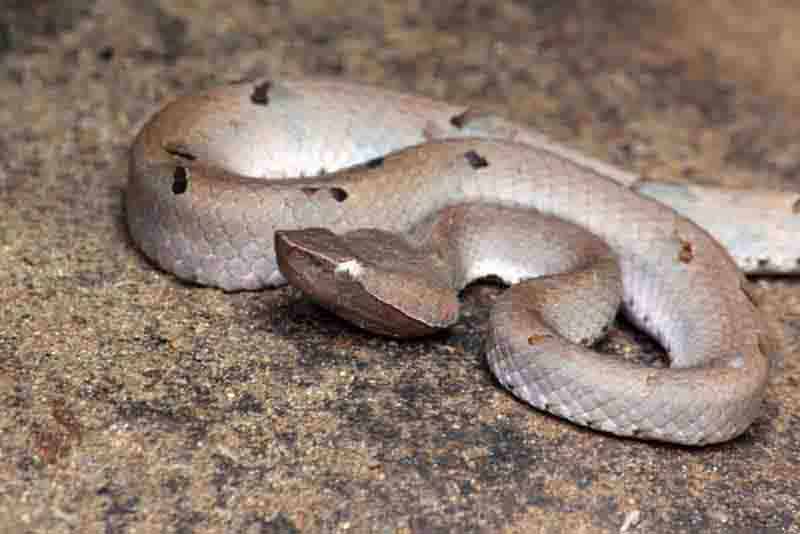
Hump nosed pit viper at Agastyavanm Biosphere Reserve Trivandrum